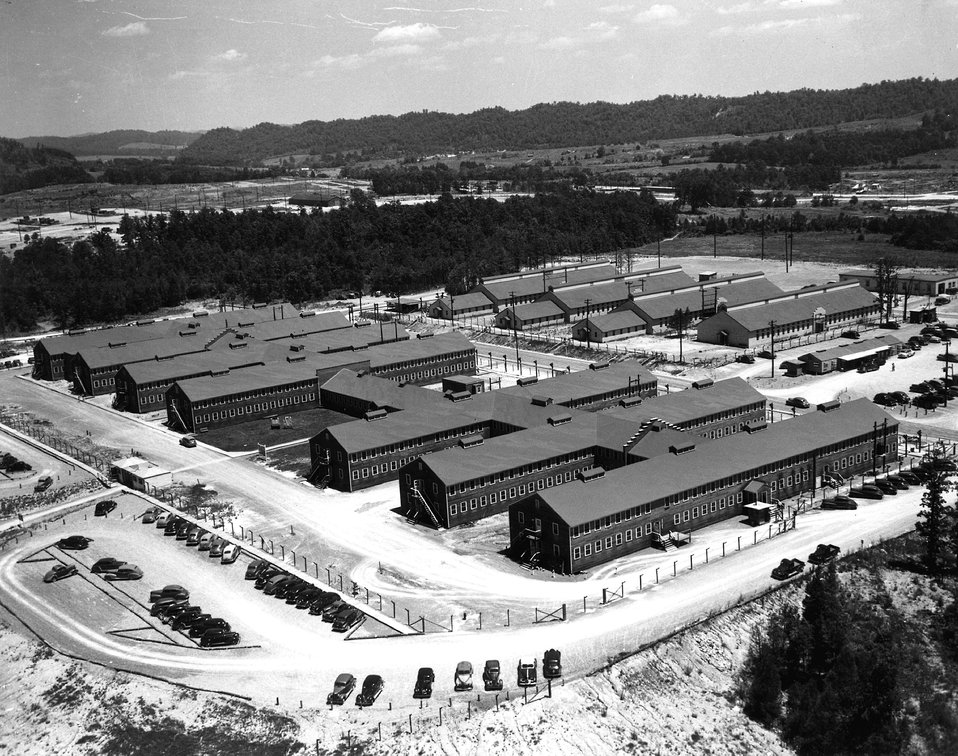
NEA Admin. Bldg. c. 1946